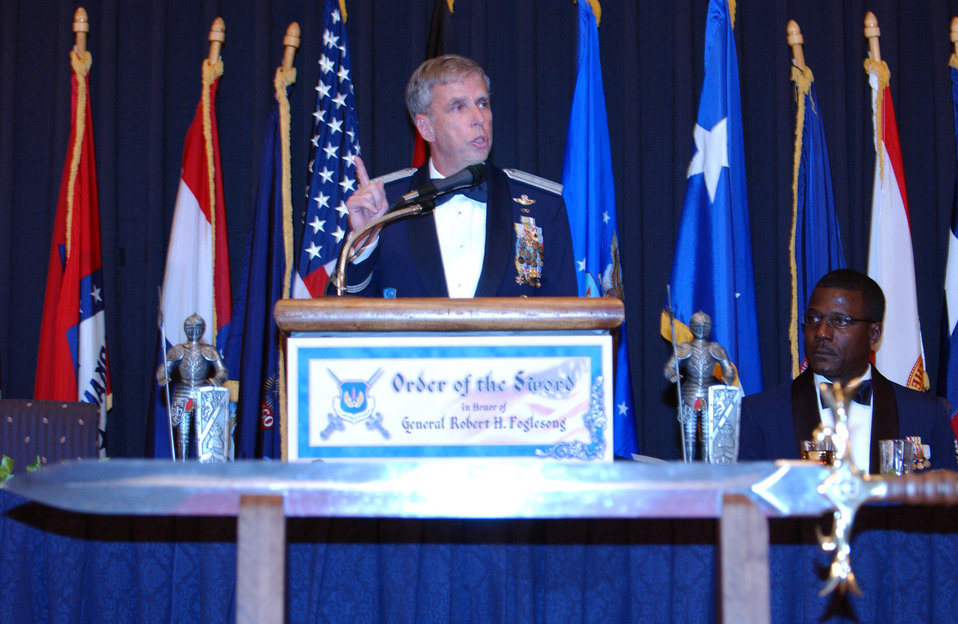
Foglesong honored with Order of the Sword

RAMSTEIN AIR BASE, Germany -- Gen. Robert H.